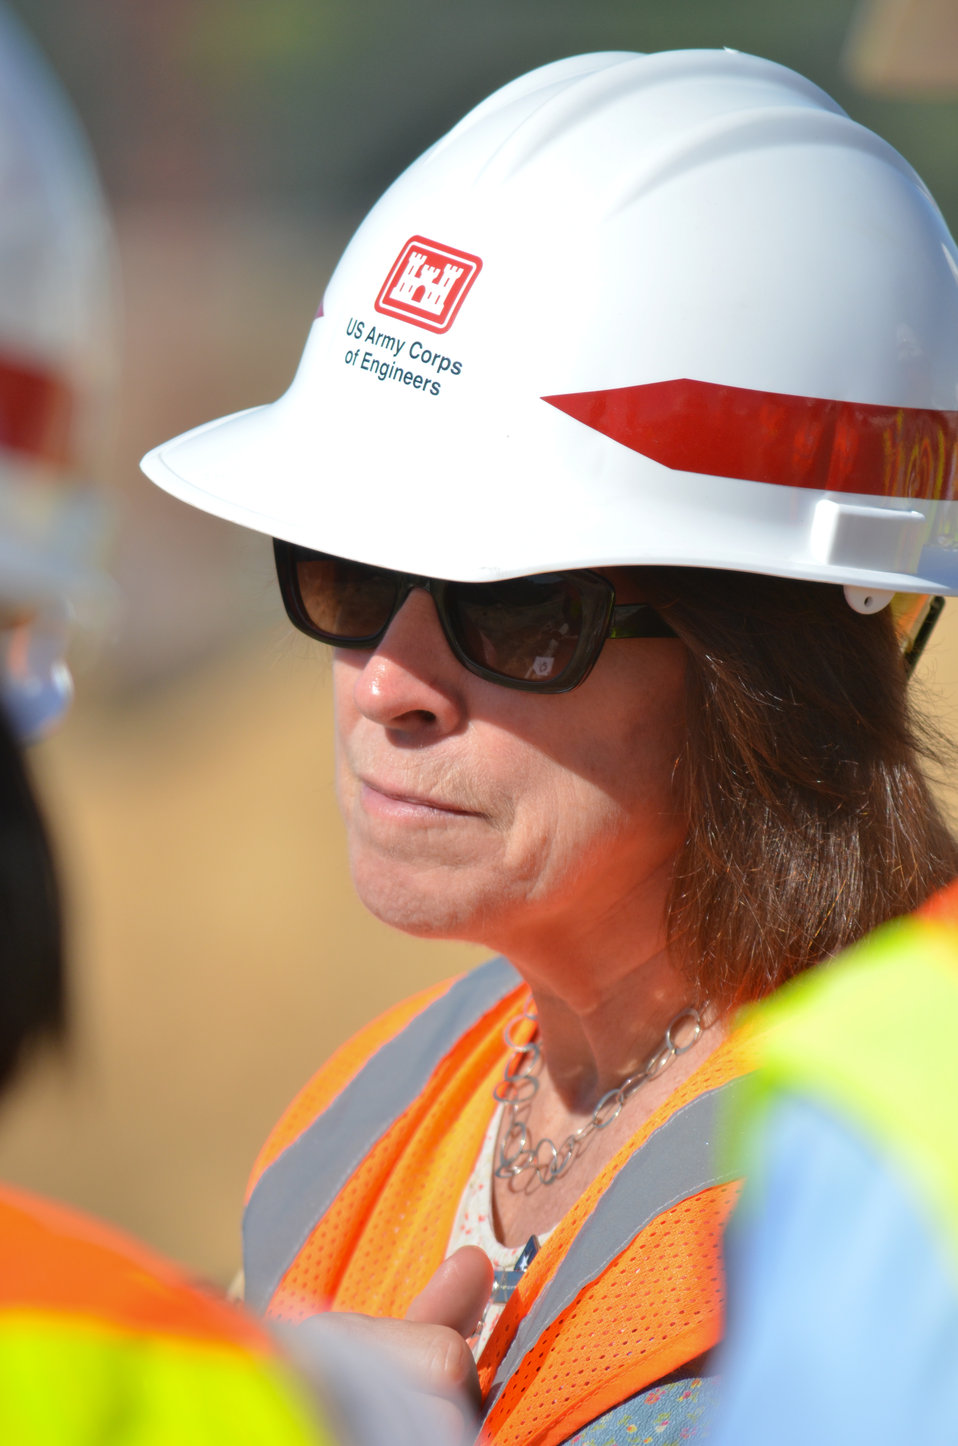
Secretary Darcy visits Folsom Dam Joint Federal Project

Jo-Ellen Darcy, Assistant Secretary of the Army for Civil Works (third from left), checks-in on progress on the Folsom Dam Joint Federal Project in Folsom, Calif., Sept. 27, 2011. The JFP is a joint effort of the U.S. Army Corps of Engineers and the Bureau of Reclamation to improve the safety of Folsom Dam and reduce flood risk for the Sacramento area.